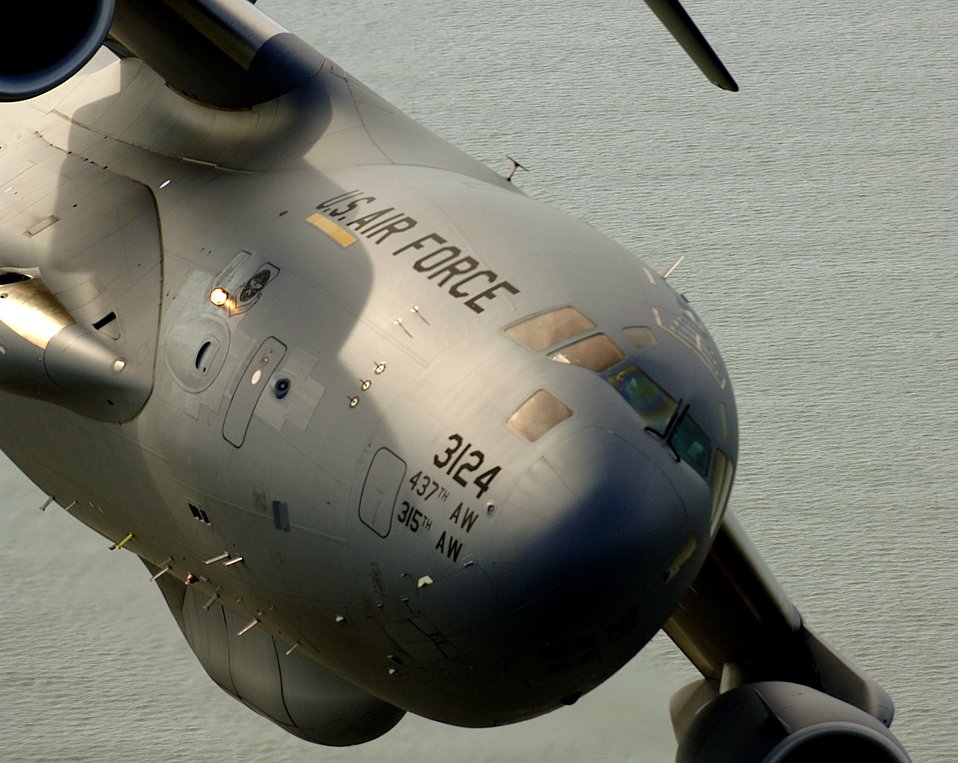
C-17s over Charleston

A C-17 Globemaster III from the 14th Airlift Squadron, Charleston Air Force Base, S.C., banks over the Atlantic Ocean while on a local training mission on Tuesday, May 16, 2006.